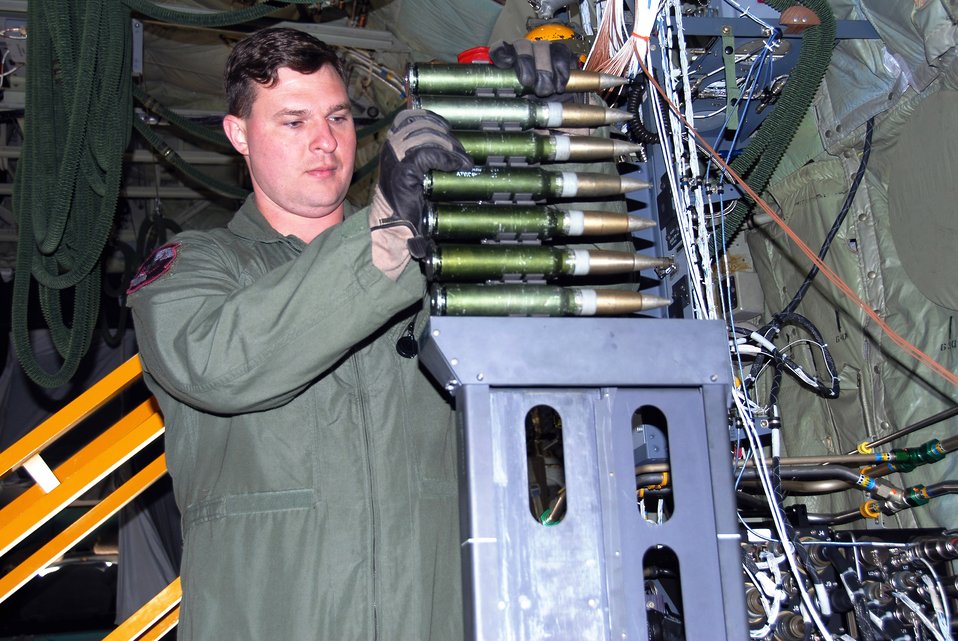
Spooky gunship armed with new cannons

Tech. Sgt. Ben Filek practices loading a 30 mm Bushmaster cannon aboard an AC-130U Spooky gunship Jan. 26 at Hurlburt Field, Fla. The 30 mm gun will eventually replace both the 40 mm cannon and 25 mm gun on U-model gunships. Sergeant Filek is an aerial gunner with the 19th Special Operations Squadron at Hurlburt Field.